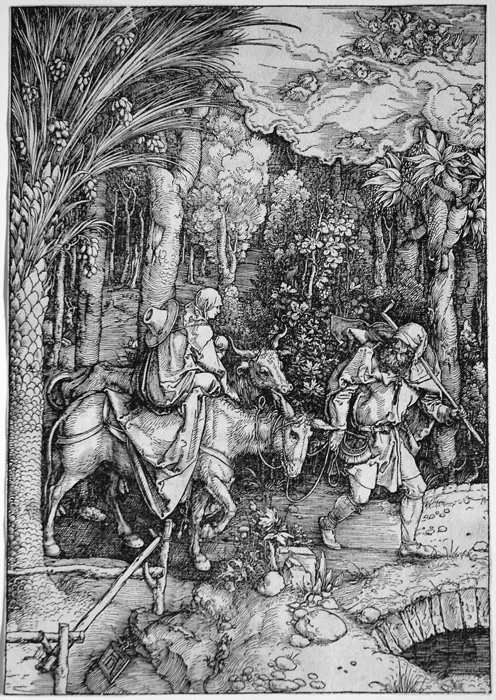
'Life of the Virgin, Flight into Egypt', woodcut by Albrecht Dürer, c. 1503-4, Honolulu Academy of Arts